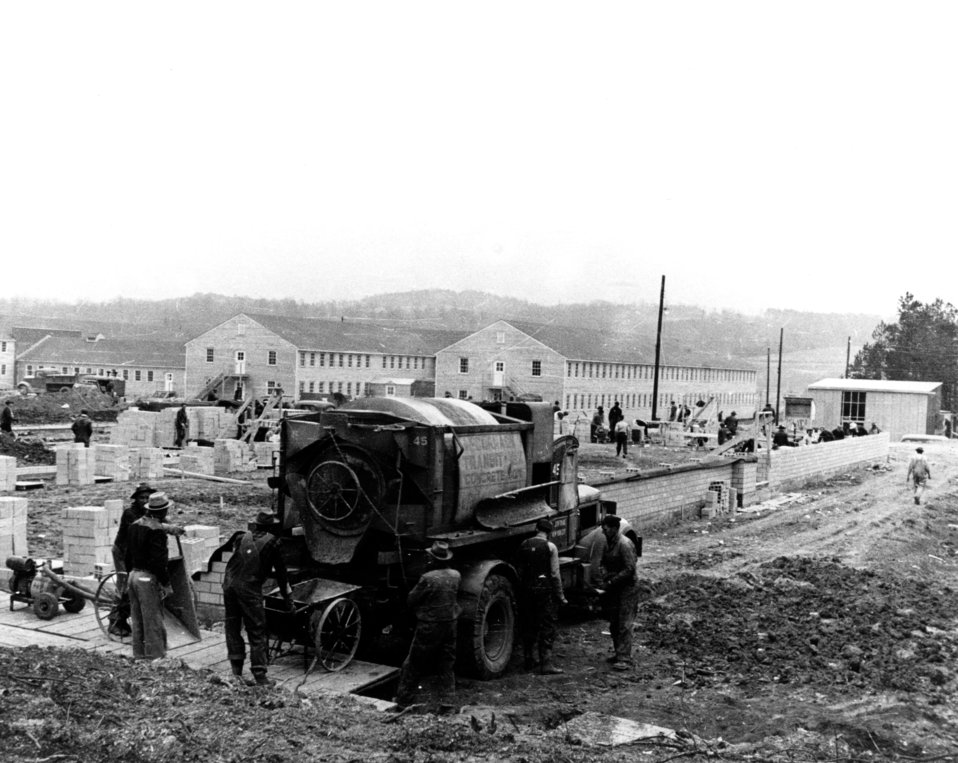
Construction activity at Oak Ridge